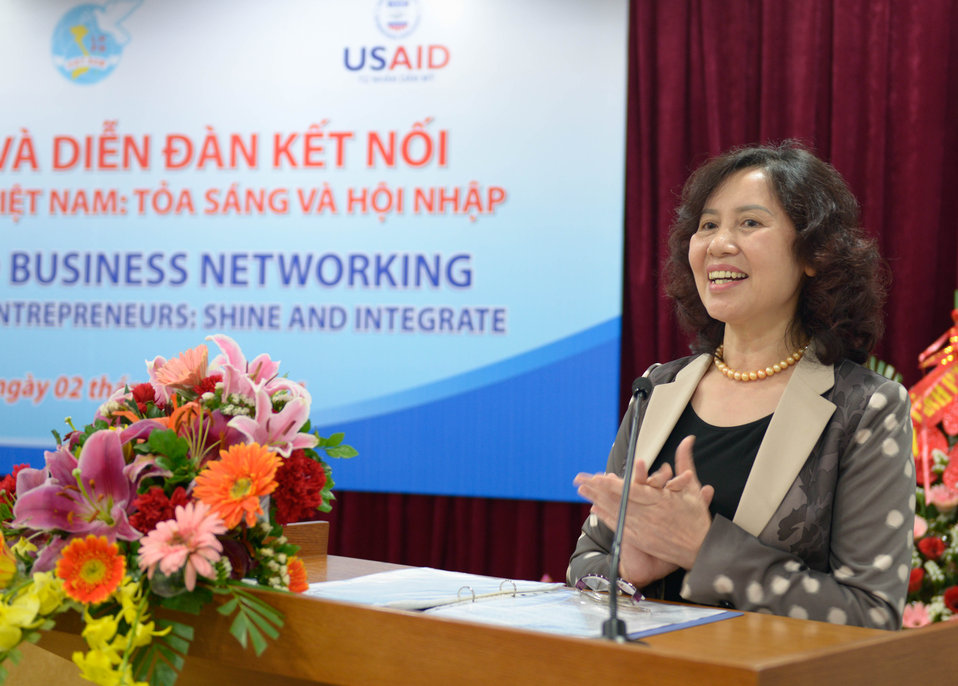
Vietnam Women's Union Vice President, Nguyen Thi Kim Thuy speaks at the seminar for female entrepreneurs

Phu Tho, Vietnam. March 1, 2014.